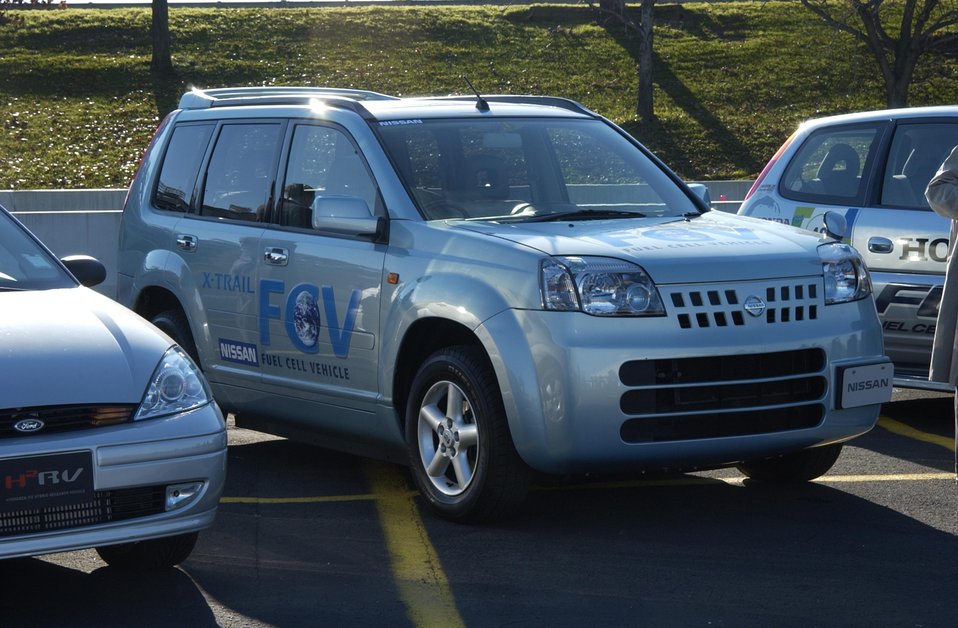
NISSAN'S FCV, A ZERO EMISSION HYDROGEN FUELED FUEL CELL VEHICLE.

HYDROGEN IS A CLEAN AND SUSTAINABLE FORM OF ENERGY THAT CAN BE USED IN MOBILE AND STATIONARY APPLICATIONS. FUEL CELLS HARNESS THE CHEMICAL ENERGY OF HYDROGEN TO GENERATE ELECTRICITY WITHOUT COMBUSTION OR POLLUTION. HYDROGEN AND FUEL CELLS HAVE POTENTIAL TO SOLVE SEVERAL MAJOR CHALLENGES FACING THE COUNTRY TODAY SUCH AS DEPENDENCE ON PETROLEUM IMPORTS, POOR AIR QUALITY, AND GREENHOUSE GAS EMISSIONS.